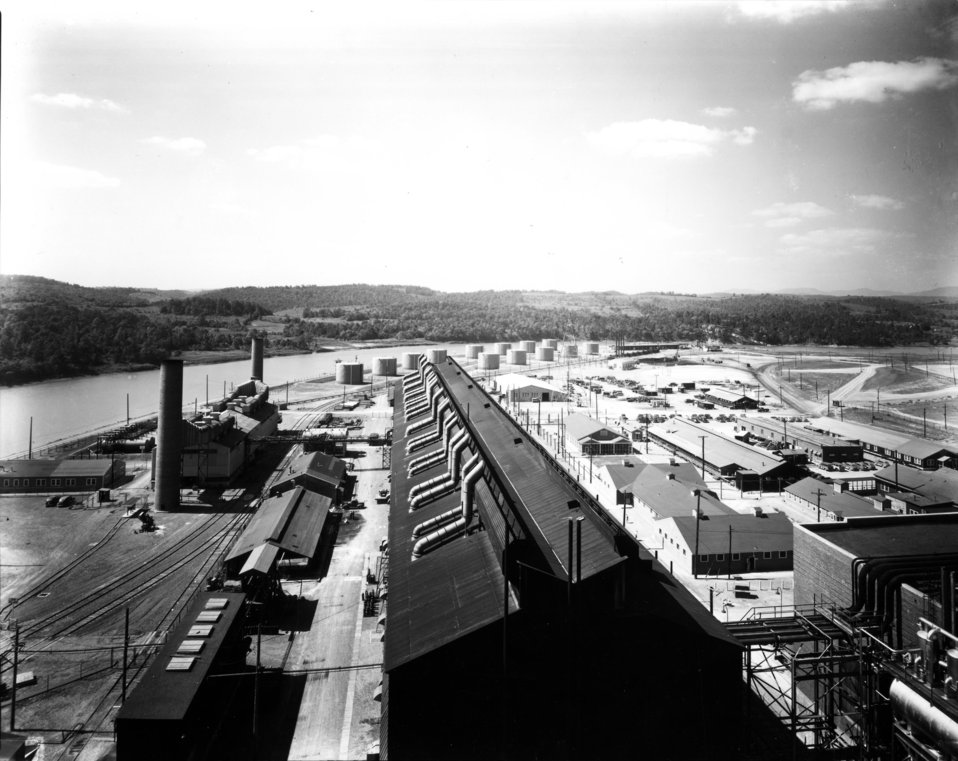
Schools at Oak Ridge